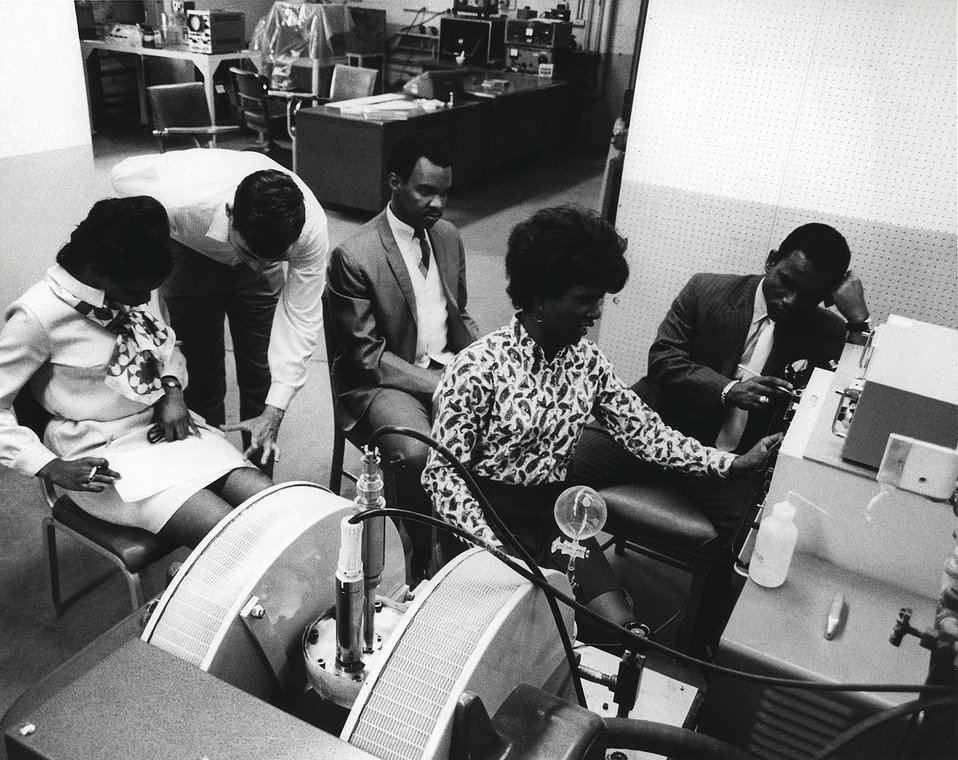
Students visit Argonne each year to pursue studies in major sciences.
c.1970